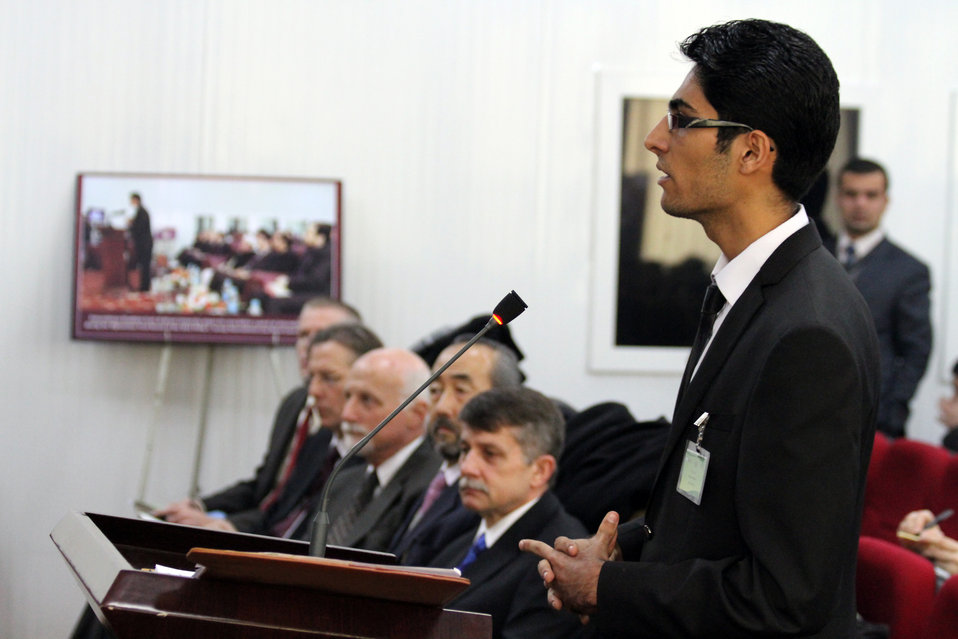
Afghanistan Final National Round of the 2013 Philip C.Jessup International Law Moot Court Competition